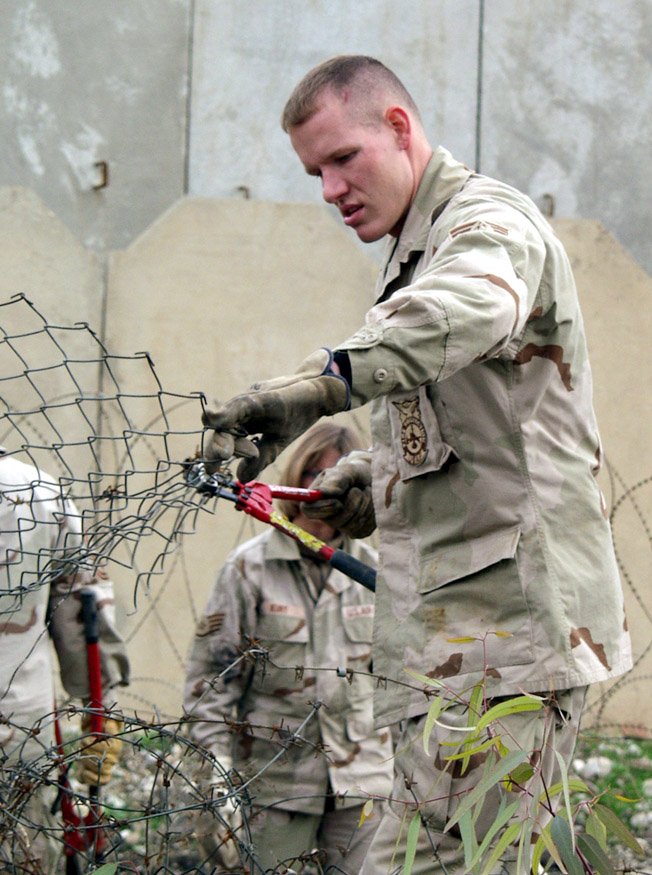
Airmen restoring mosque

KIRKUK AIR BASE, Iraq -- Staff Sgt. Ryan Darnell cuts through a damaged chain-link fence during the Jan. 11 cleanup effort to help restore a mosque here. Sergeant Darnell is assigned to the 506th Expeditionary Civil Engineer Squadron here.